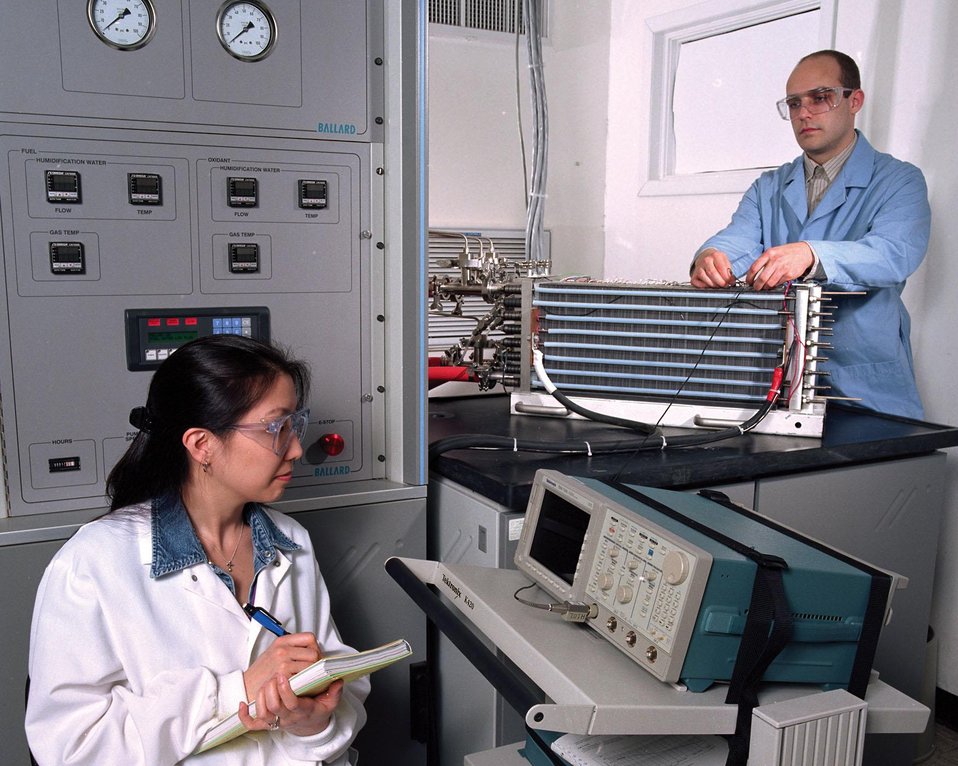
A FUEL-CELL STACK IS RUN THROUGH INITIAL DIAGNOSTICS BY ANL CHEMICAL ENGINEERS.

FUEL CELLS COMBINE HYDROGEN AND OXYGEN TO PRODUCE ELECTRICITY AND WATER, A MUCH CLEANER SYSTEM COMPARED TO COMBUSTION ENGINES. COMMERCIAL USE OF FUEL CELLS WILL BE ONE OF THE NATION'S FIRST STEPS TOWARD A HYDROGEN ECONOMY. DOE'S FREEDOMCAR PROGRAM CALLS FOR THE DEVELOPMENT OF HYDROGEN FUEL CELL POWERED CARS. FUEL CELLS MAY ALSO POWER LAP TOP COMPUTERS, CELL PHONES AS WELL AS HOME ELECTRICAL AND HEATING SYSTEMS.